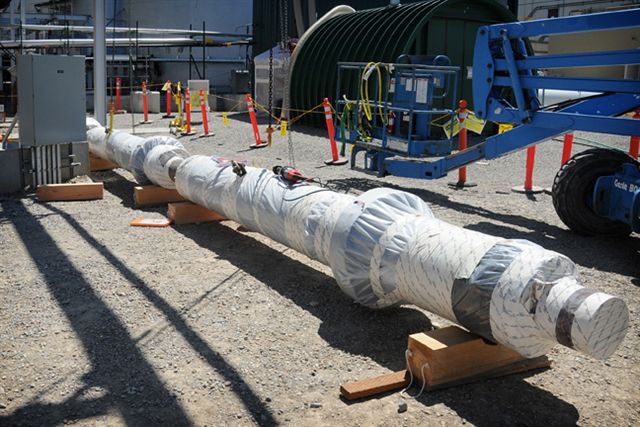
RAN DD MFC S117 MFC-766 STEAMPIPE 070610 P6556-006 A